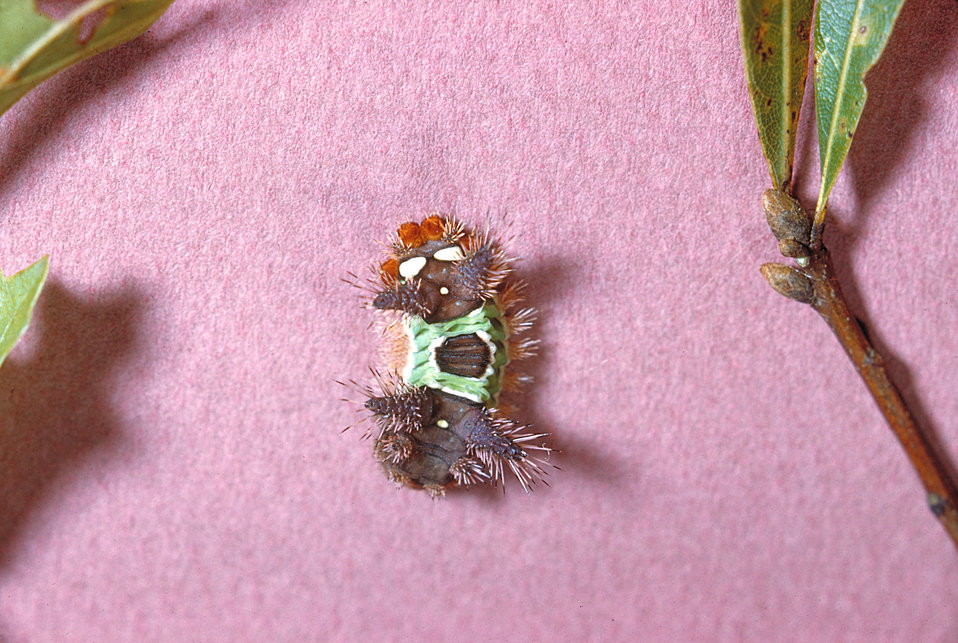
This is a photograph of a Saddleback caterpillar, Sibine stimulea, a moth larva with characteristic urticarial hairs.